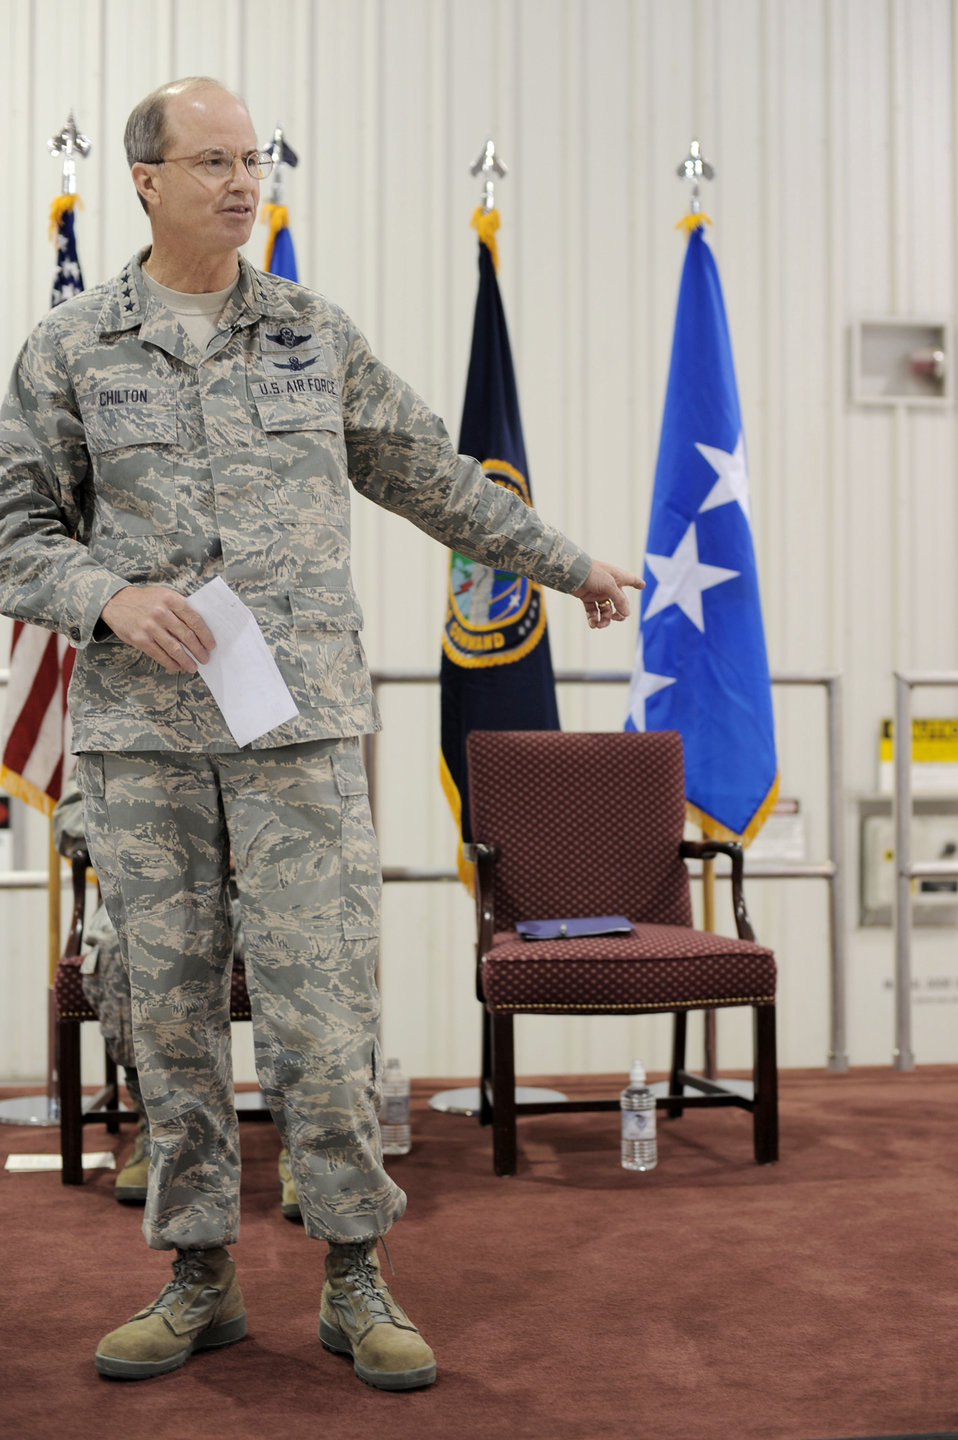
No higher calling

Gen. Kevin P. Chilton speaks Dec. 1, 2010, during a commander's call at Whiteman Air Force Base, Mo. General Chilton's speech focused on the importance of Air Force Global Strike Command and nuclear deterrence. General Chilton is the U.S. Strategic Command commander.